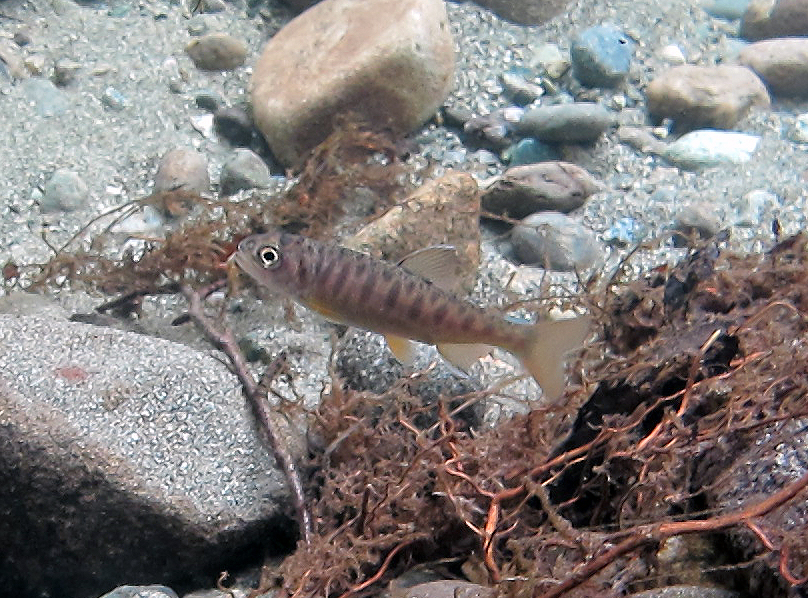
Coyote Creek juvenile coho